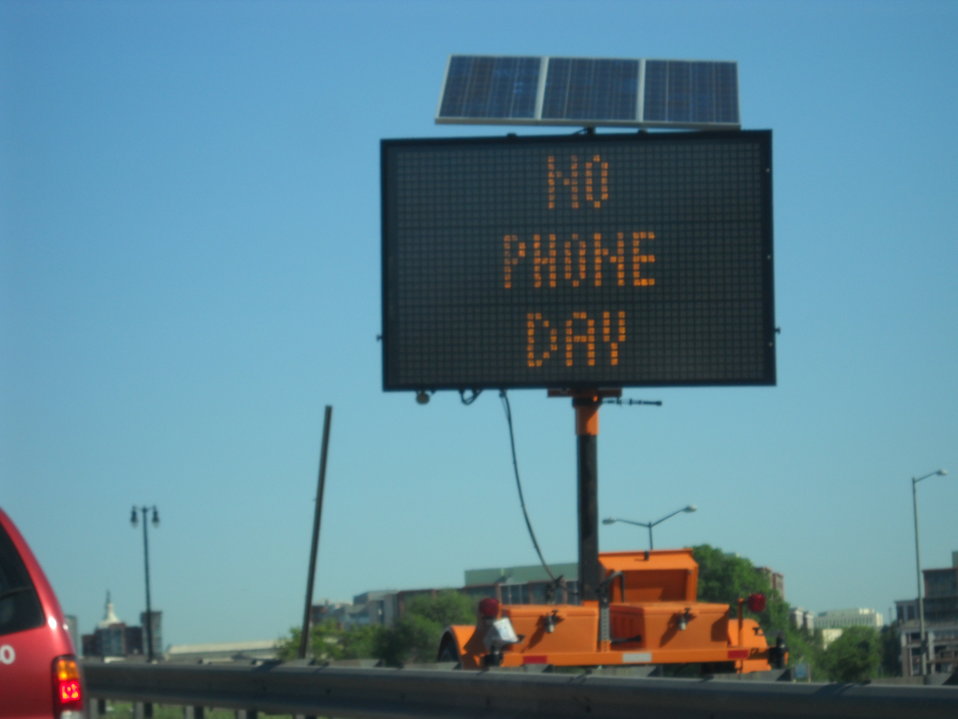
National No Phone Zone Day Newsum Washington, DC April 30, 2010 001